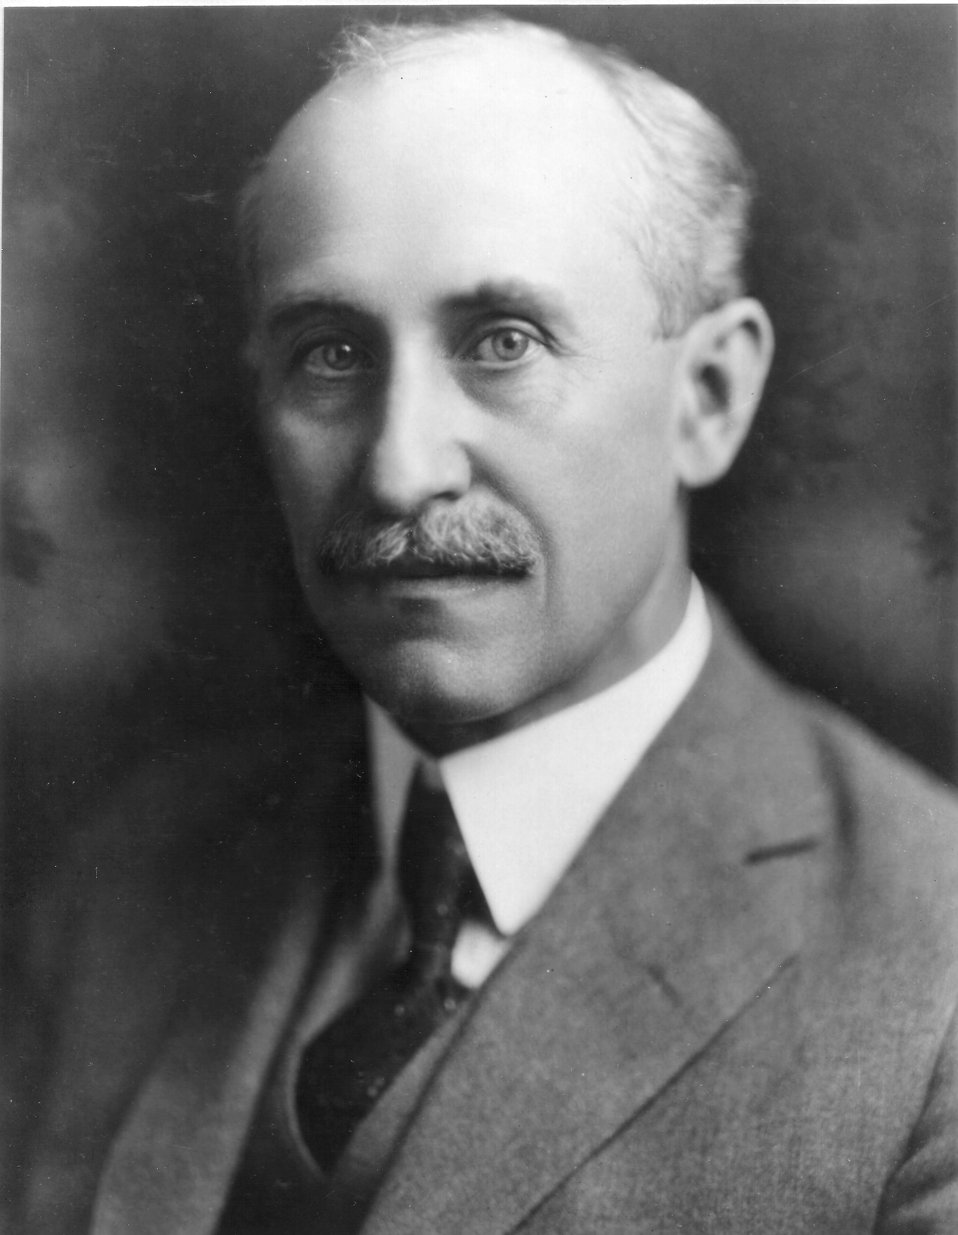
Orville Wright

EARLY YEARS -- Orville Wright